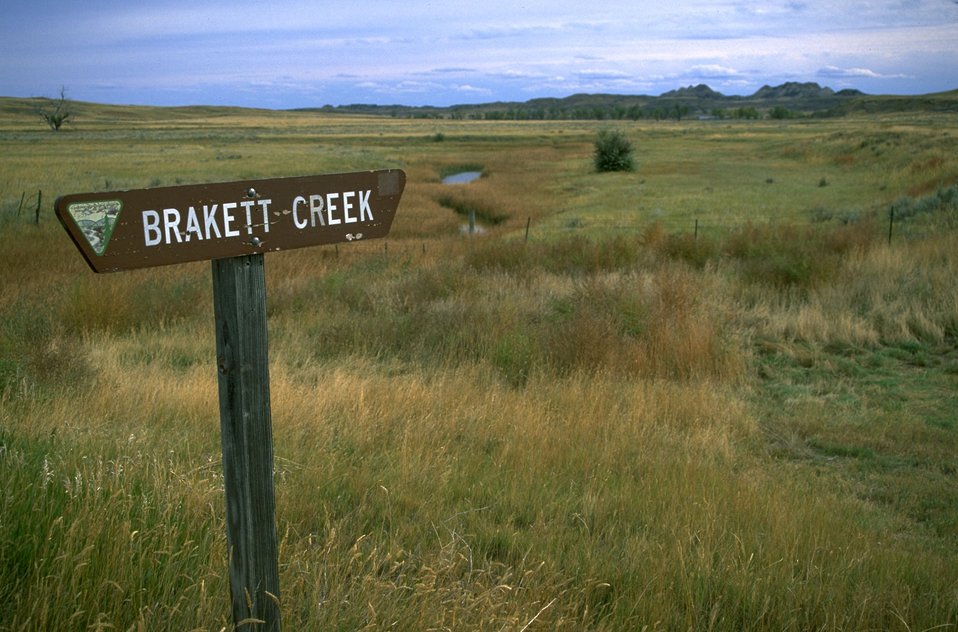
Brackett Creek sign on the prairies of eastern Montana